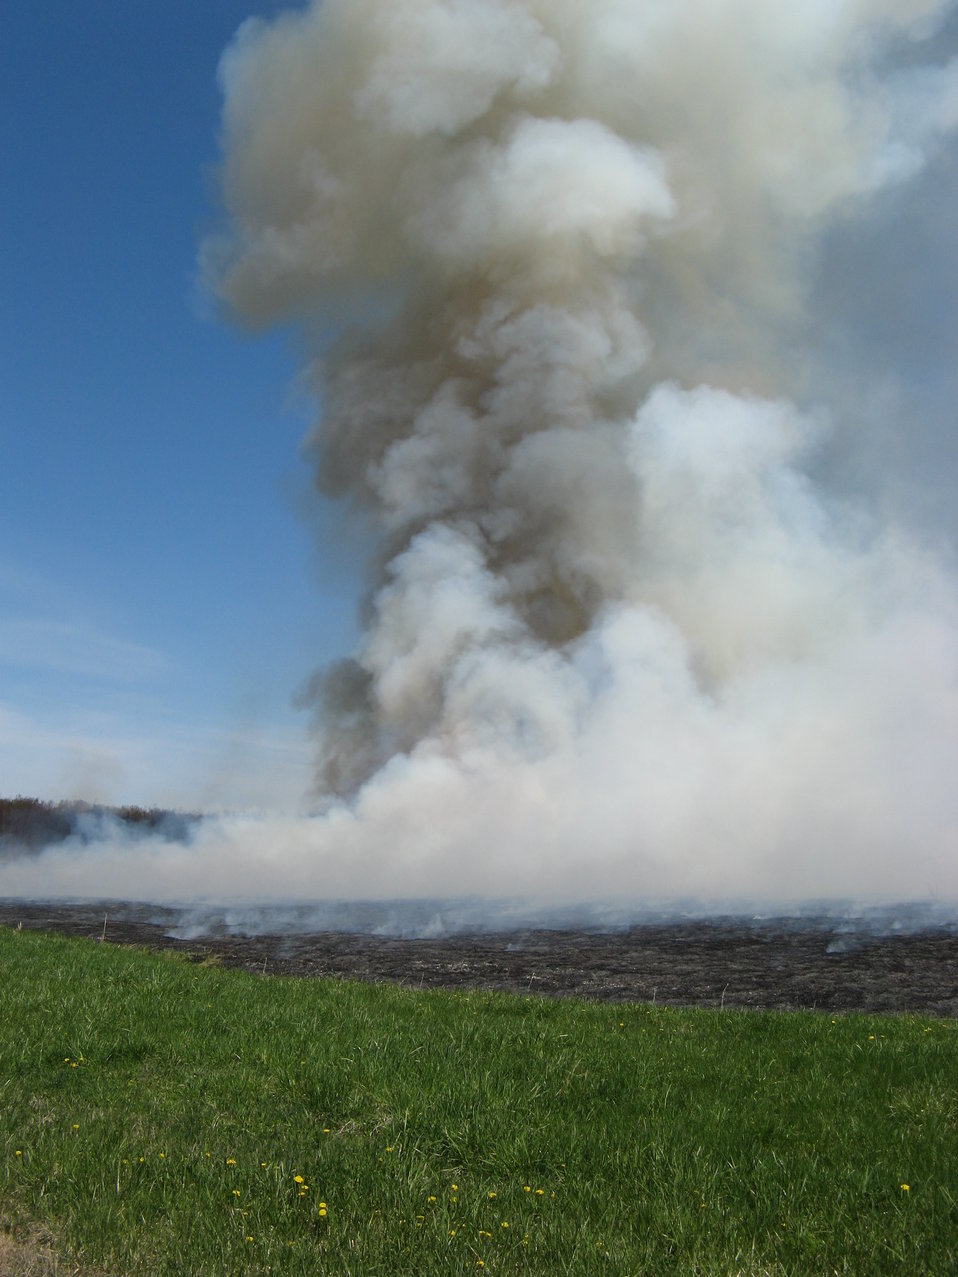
Smoke plume from a controlled burn at Iroquois National Wildlife Refuge

Alabama, New York: A column of smoke rises and dissipates from a grassland controlled burn at Iroquois National Wildlife Refuge to maintain habitat for migratory birds. Fire managers choose conditions in which to burn to keep smoke away from sensitive areas.